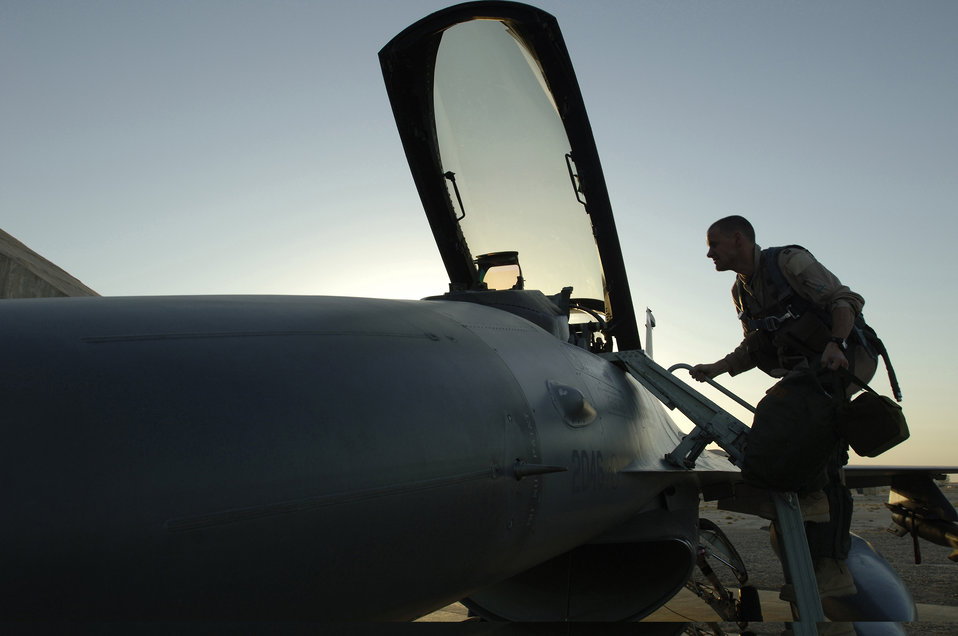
Iraqi Freedom

BALAD AIR BASE, Iraq -- Capt. Scott Walker prepares to enter the cockpit of an F-16 Falcon before flying a combat mission over Iraq here June 11. Captain Walker is deployed from the 510th Fighter Squadron at Aviano Air Base, Italy, in Support of Operation Iraqi Freedom.